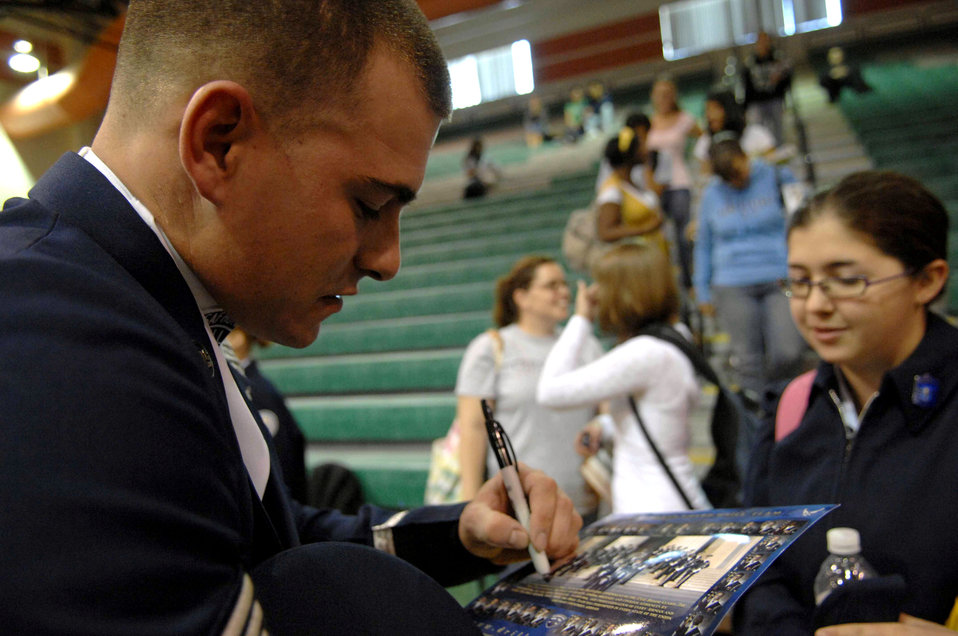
Vegas performance

Senior Airman Adam Clonick autographs a souvenir for a Air Force Junior ROTC cadet after the Air Force Honor Guard drill team performance at the Palo Verde High School gym Nov. 6 in Las Vegas. The Air Force Honor Guard drill team is in Las Vegas for 14 performances throughout the military and civilian community and will perform during the Air Force 60th Anniversary Air Show and opening for Tops In Blue. Airman Clonick is an Air Force Honor Guard drill team member and operations coordinator.